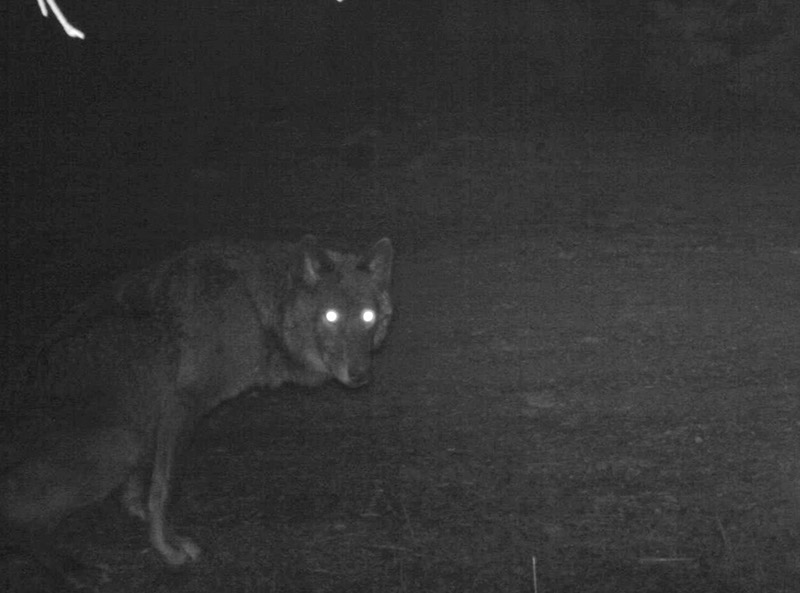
Female wolf in Oregon

Remote camera photo of a black wolf that appears to be a female. Photo captured 5/4/2014 in the same area as OR7.